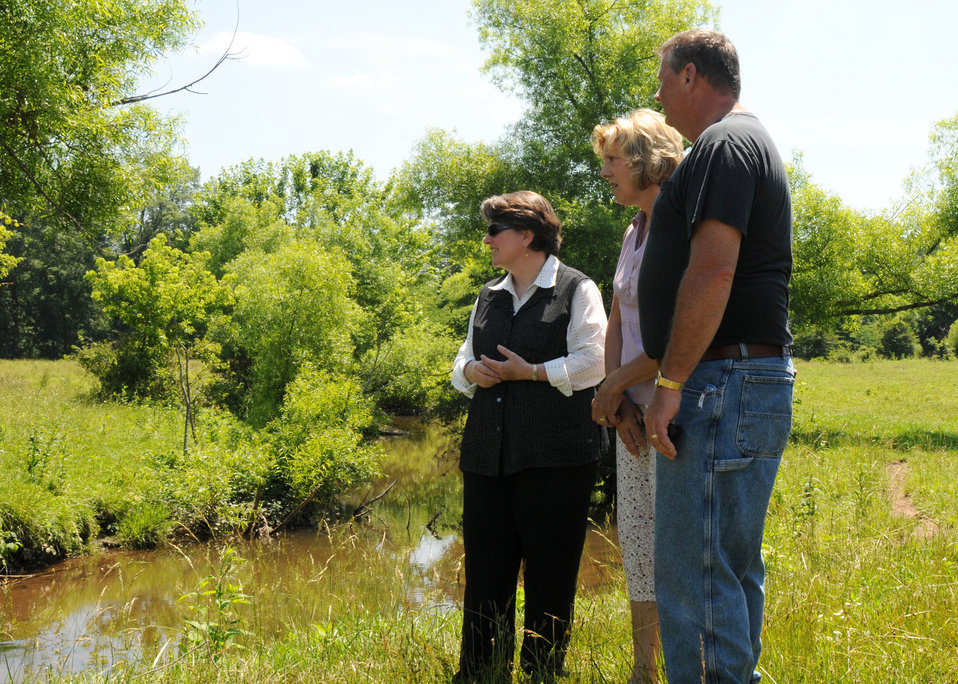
Agriculture Deputy Secretary Kathleen Merrigan looks over the creek at the farm of Mrs. Eby-Patterson and husband, Daniel. They are using new sustainable conservation techniques to keep their creek clean and to help improve the health of the Chesapeake Bay on their farm in Hershey, PA, on Friday, June 18, 2010. USDA photo 10di1410-195.